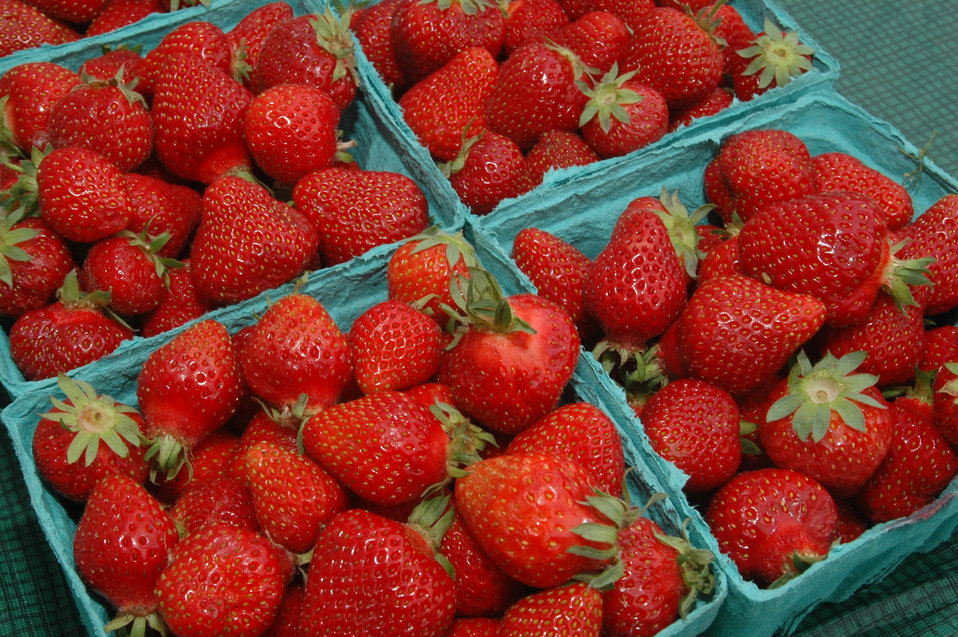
Strawberries for sale at the U.S. Department of Agriculture (USDA) Farmer’s Market held in the East parking lot of USDA's Whitten Building in Washington, D.C. on June 2, 2006.